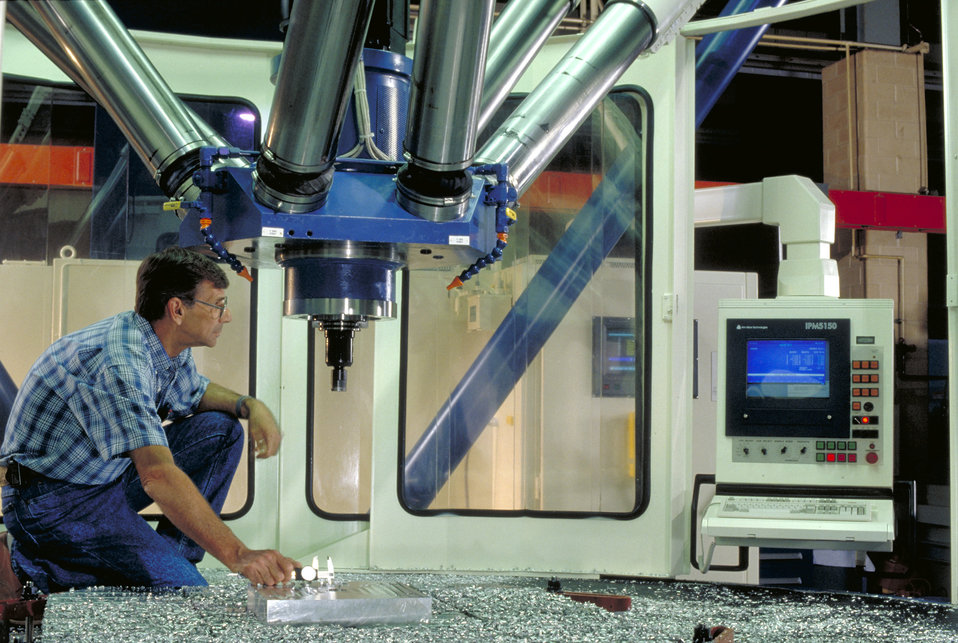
Octahedral Hexapod Machine

This 'octahedral hexapod' machine tool represents the first major departure in machine tool design in nearly a century. The machines's 'parallel actuator' technology promises to offer manufacturers a combination of versatility, stiffness, speed, and accuracy. As part of the Institute's National Advanced Manufacturing Testbed, NIST researchers and collaborators from U.S. companies and universities are studying the new tools' unique capabilities. Research areas include machine metrology, performance characterization test methods and standards, performance enhancement methods, simulation and remote experimentation tools, and open architecture controller interfaces.